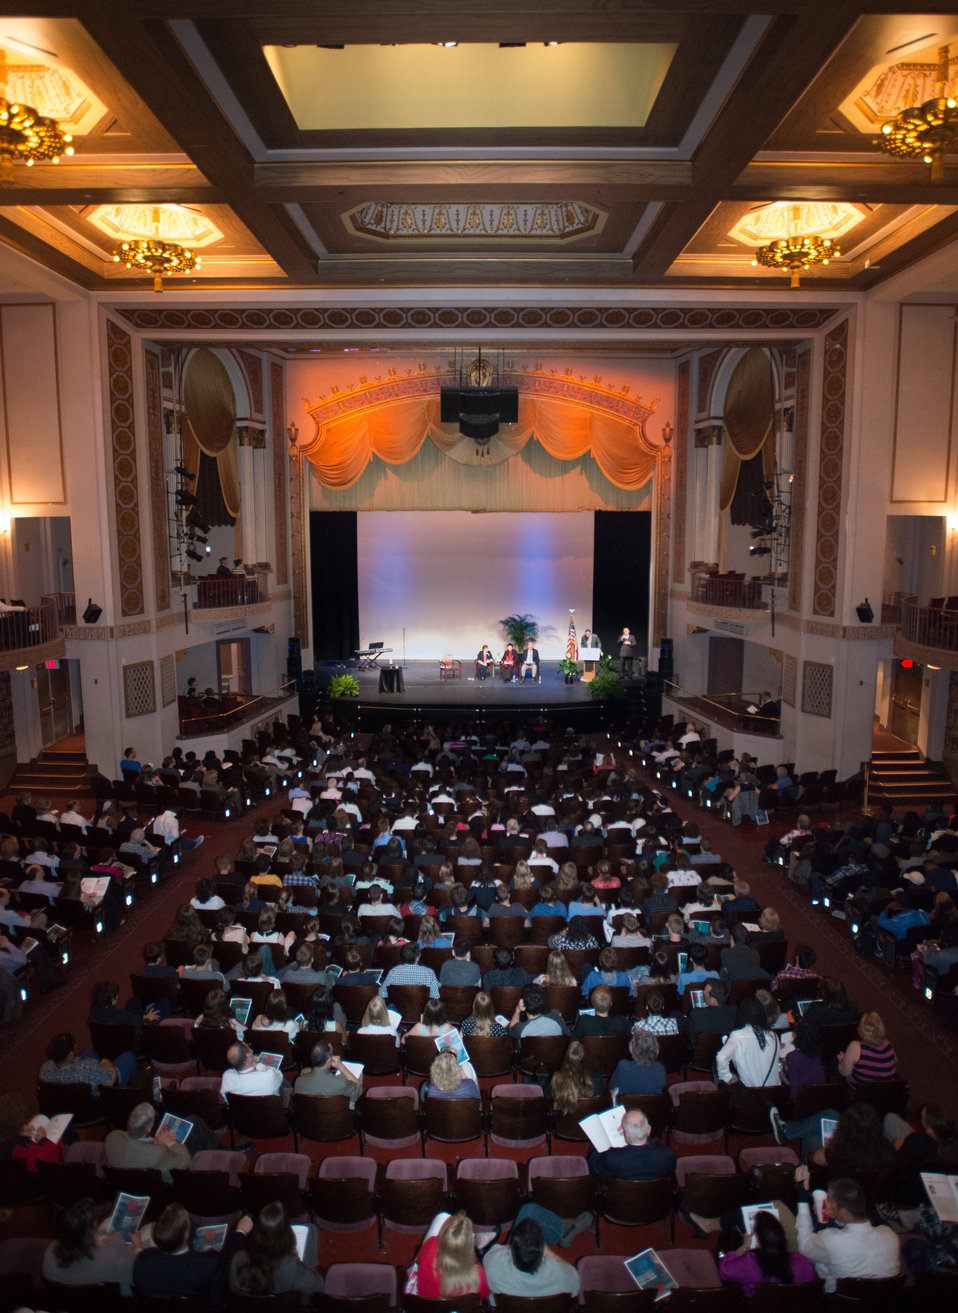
The 2013 Federal Inter-Agency Holocaust Remembrance Day, at the Lincoln Theater, on Wednesday, April 17, 2013, in Washington, D.C. The moderator is United States Holocaust Memorial Museum Division of the Senior Historian Director Peter Black, Ph.D., at podium or seated on left, and the guest speakers, left to right, are Theresienstadt Concentration Camp Czech Jewish Holocaust Survivor Ela Stein-Weissberger, and German Jewish Holocaust Survivor Inge Auerbacher; and Dachau Concentration Camp Liberator Jimmy Gentry. Since the 1979 President’s Commission on the Holocaust, an annual proclamation signed by the President of the United States recognizes the importance of remembering the atrocities of the Holocaust that should never be forgotten or be ignored.